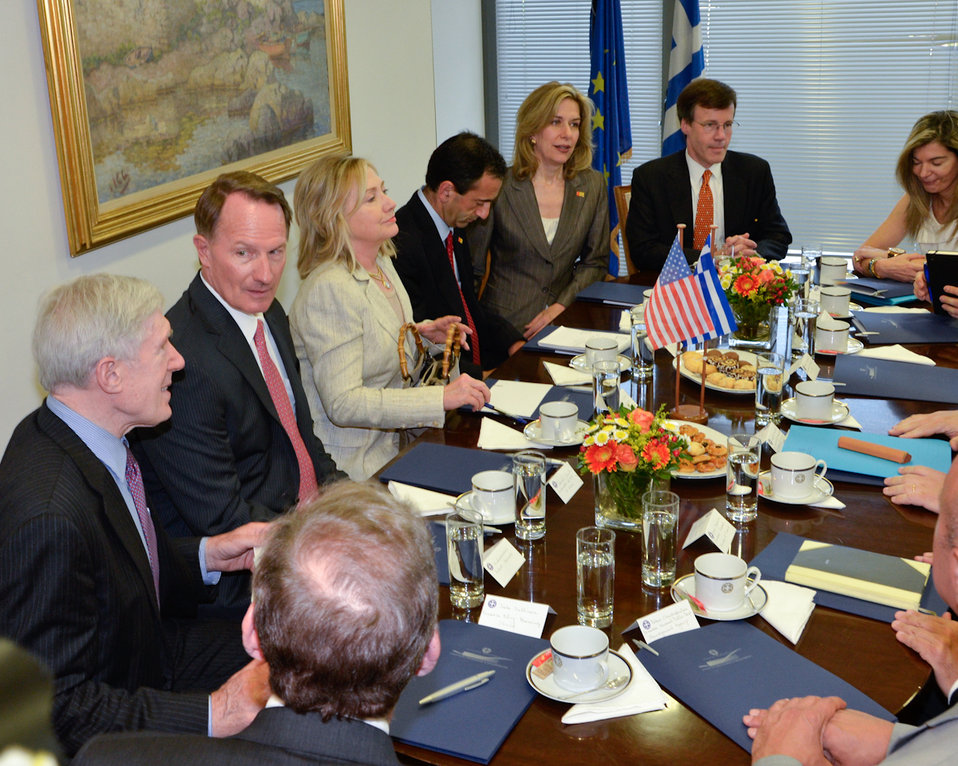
Secretary Clinton Participates in Meets With Greek Foreign Minister Venizelos

U.S. Secretary of State Hillary Rodham Clinton meets with Greek Finance Minister Evangelos Venizelos in Athens, Greece, on July 17, 2011. Under Secretary of State for Economic, Energy and Business Affairs Robert Hormats is pictured on the left, and Assistant Secretary of State for European and Eurasian Affairs Philip Gordon is seated to the right of the Secretary.